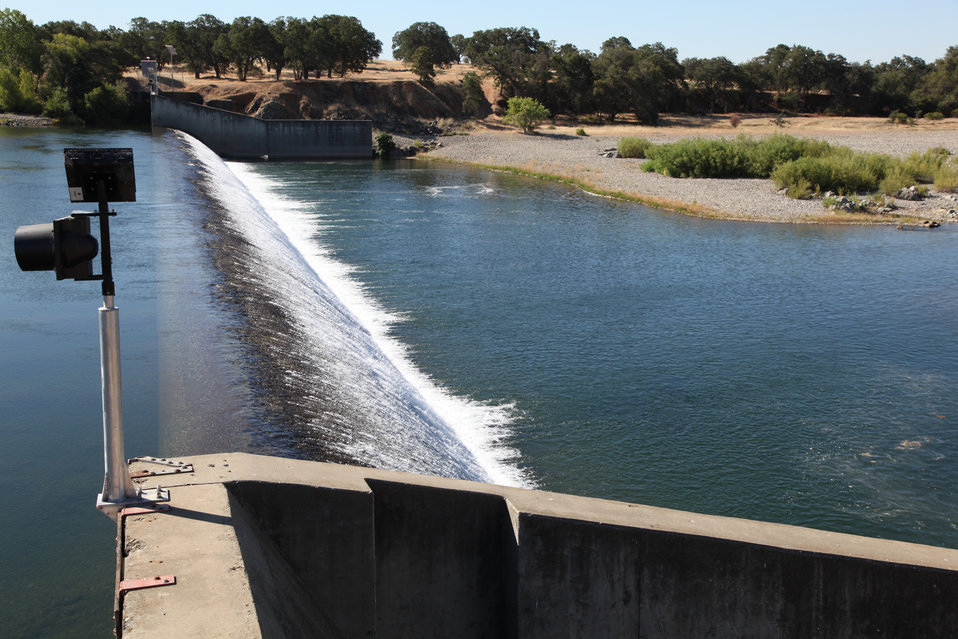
Corps reconnaissance team tours Yuba River

Water flows past Daguerre Point Dam during a June 18, 2014, site visit by a study team from the U.S. Army Corps of Engineers Sacramento District. Members of the Sacramento District team assessing possible federal projects for ecosystem restoration along Northern California's Yuba River reviewed the water’s route from Daguerre Point Dam up to Downieville. The USACE team was accompanied by members of the Yuba County Water Agency and several YCWA consultants in this initial trip to gather data on the overall state of the Yuba and water facilities along the route.